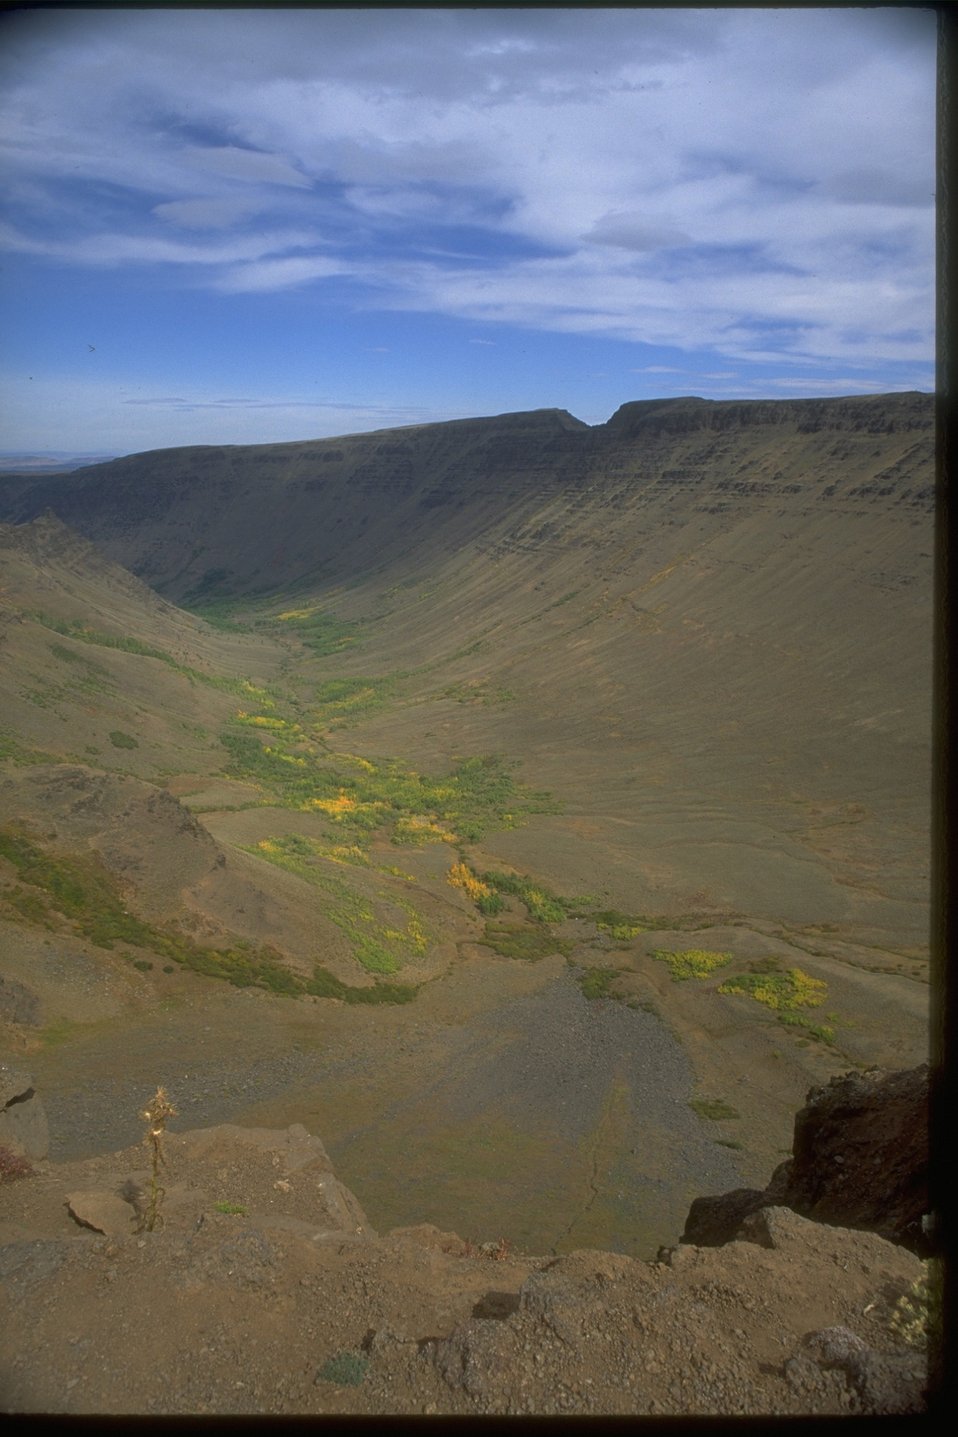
Steens Mountain series.